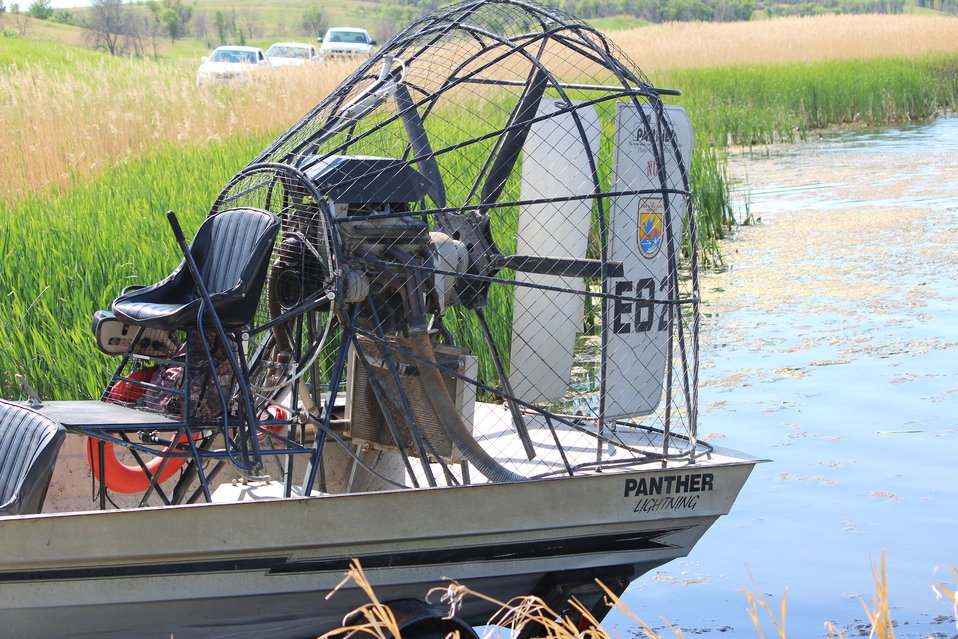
Airboat Propeller

A Motorboat and Airboat Safety Training was recently held at the Upper Souris National Wildlife Refuge in North Dakota. Students received classroom training as well as field training in the use of personal flotation devices (PFDs), various motorized boats, trailers, and airboats. Students had to pass both a written exam and a practical exam where both safety and skills were demonstrated while running set up courses.